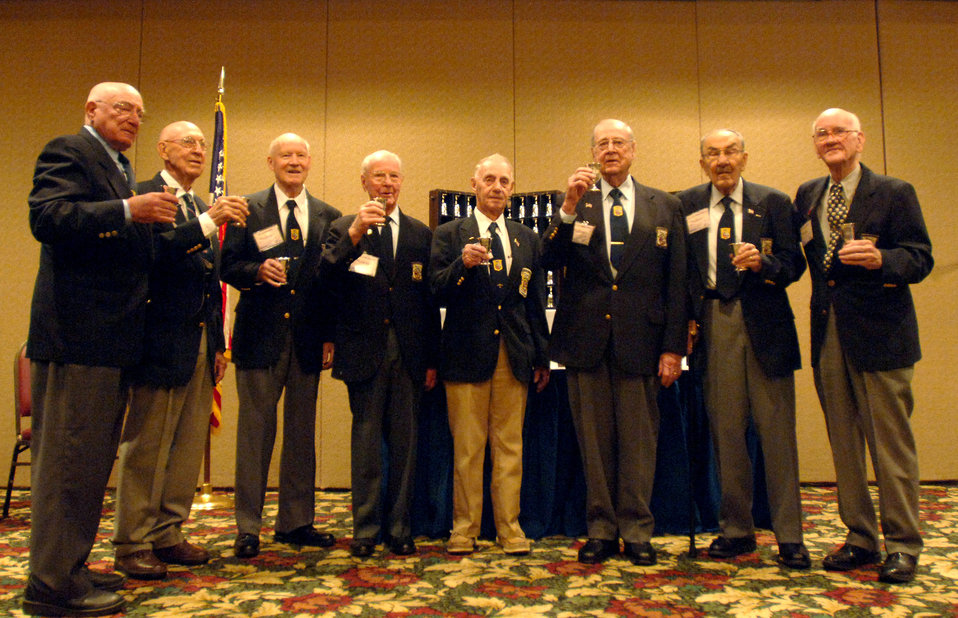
Doolittle Raiders celebrate 64th reunion

Eight of the surviving 16 Doolittle Raiders raise their goblets for their fallen brothers during their 64th reunion in Dayton, Ohio, April 18, 2006.